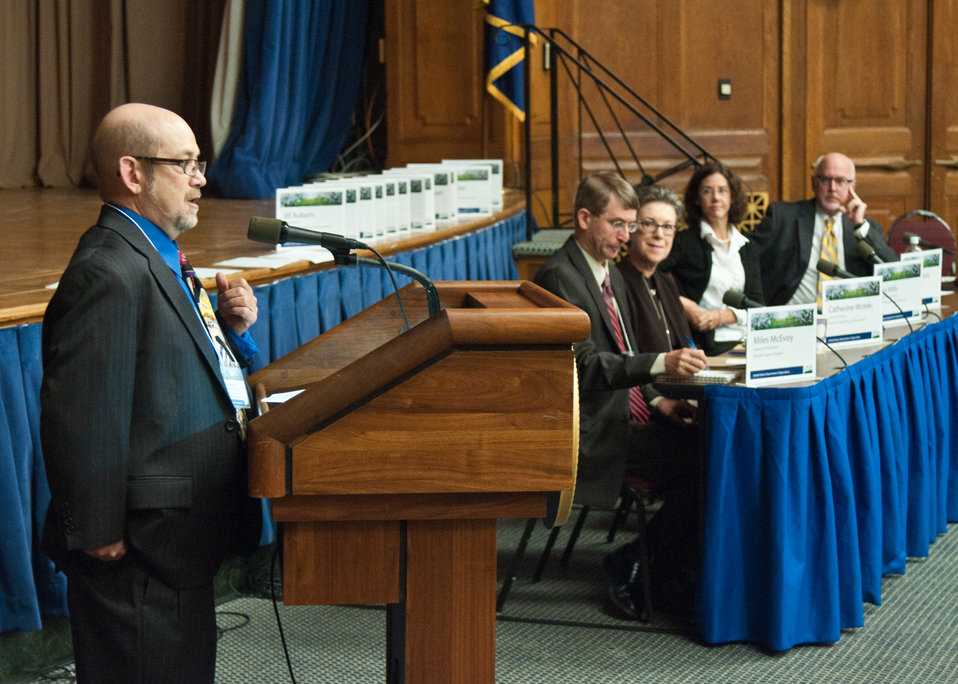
Mark Lipson, Organic and Sustainable Agriculture Policy Advisor addresses stakeholders and members of the public during the USDA Activities and Priorities Related to Organic Agriculture and Markets Public Listening Session held at the U.S. Department of Agriculture, in Washington DC, Tuesday, September 20, 2011. The purpose of the event was to gain the perspective of stakeholders and members of the public, important tools to help USDA Programs examine and prioritize their activities and objectives in order to best serve the organic community. To Lipson's' left are: Miles McEvoy, Deputy Administrator, National Organic Program, Dr. Woteki, Kelly Strzelecki, Senior Trade Advisor, Foreign Agriculture Service and David Shipman, Acting Administrator, Agricultural Marketing Service.